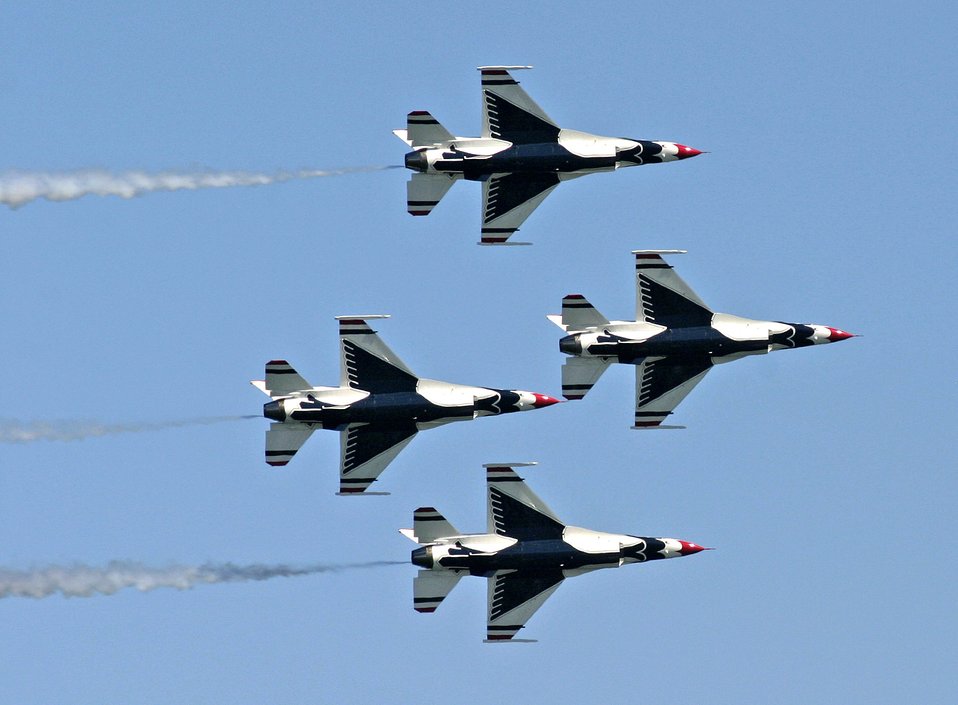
Milwaukee air show

F-16 Fighting Falcons of the U.S. Air Force Air Demonstration Squadron, the Thunderbirds, perform at an air show in Milwaukee on July 15.